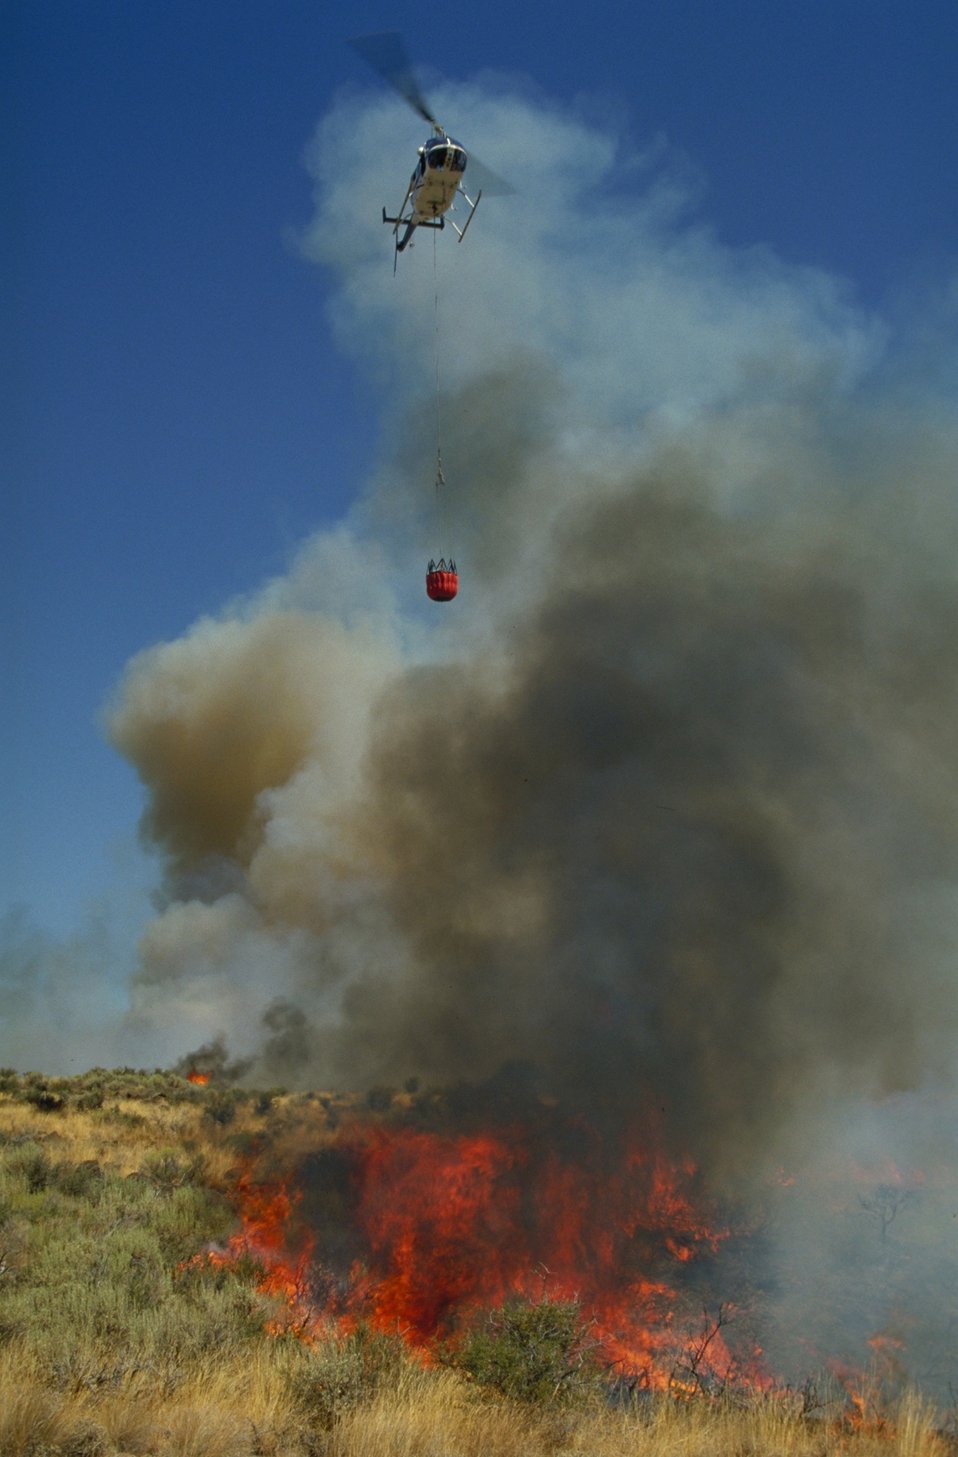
Helicopter bucket drop Fire Season 2000 Lower Snake River District LSRD